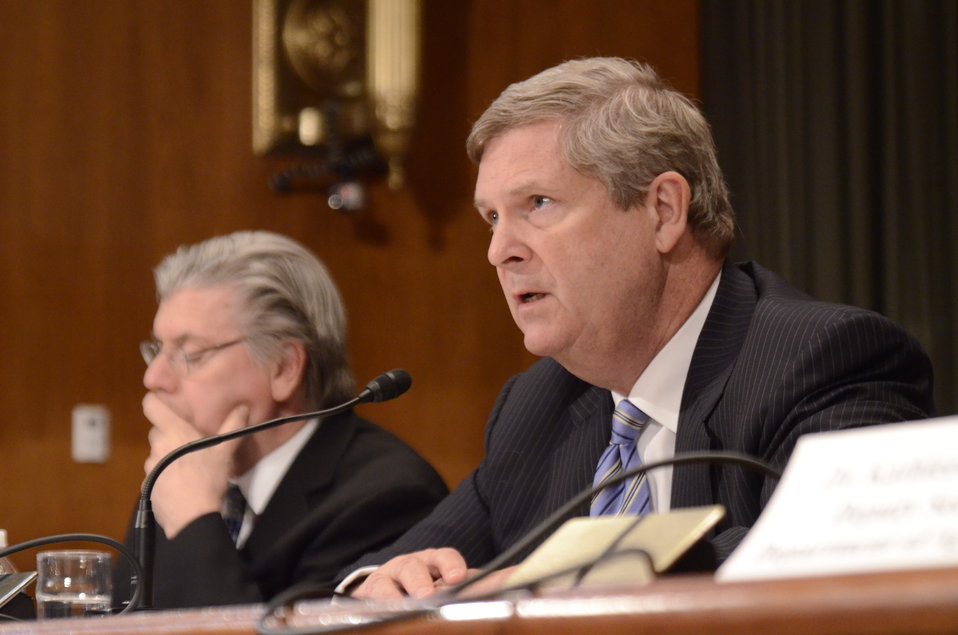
Agriculture Secretary Tom Vilsack testifies before the Senate Agriculture Appropriations Committee on the fiscal year 2013 budget at the Dirksen Senate Office Building in Washington, D.C., on Thursday, March 29, 2012.